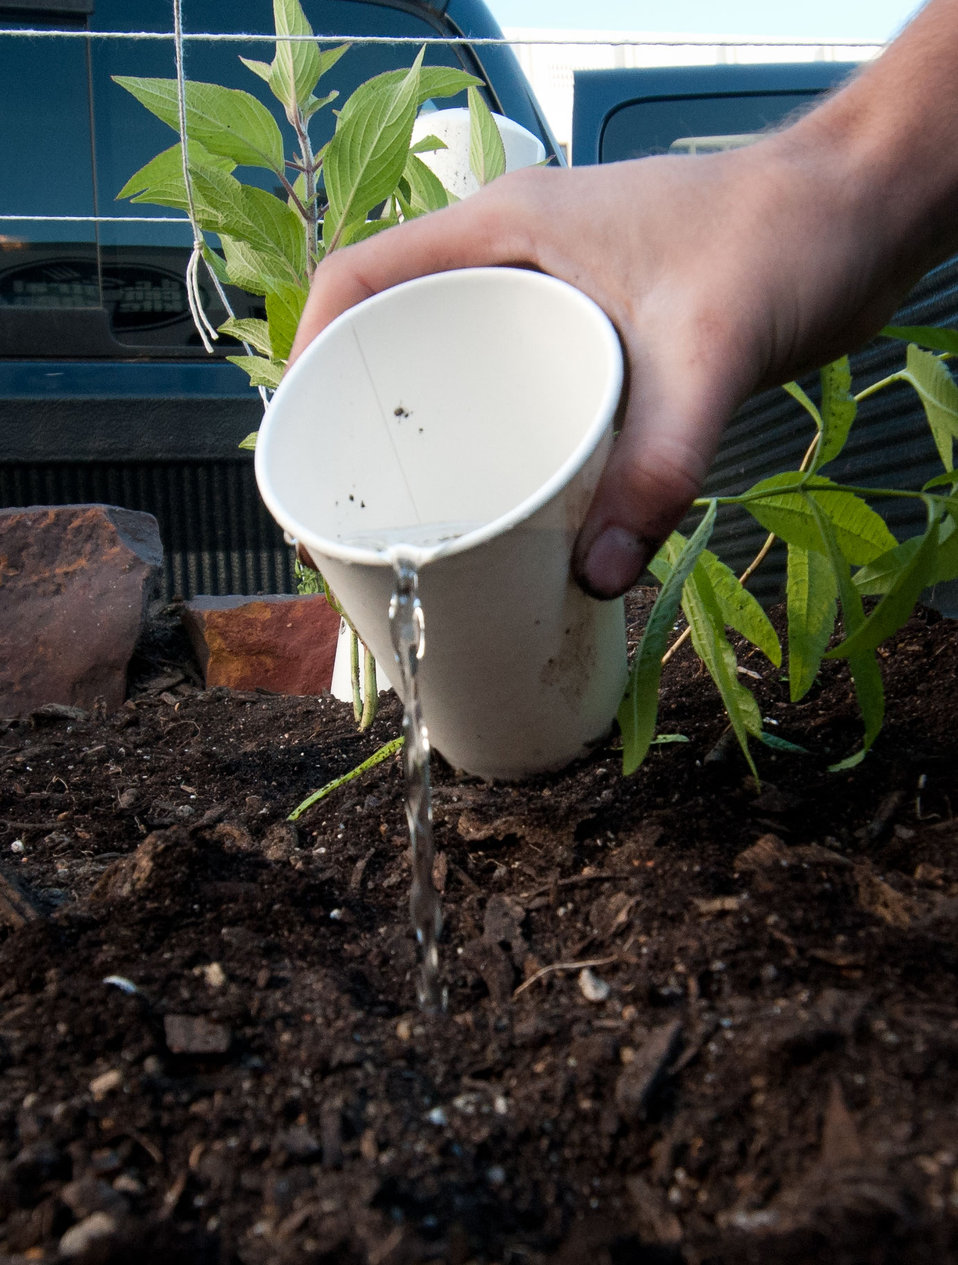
Water is added to a planting hole before seeds are added to the Truck Farm in Washington, D.C. on Friday, April 6, 2012. The Truck Farm is a D.C. Central Kitchen and U.S. Department of Agriculture’s People’s Garden Initiative partnership. Like other Truck Farms around the country, this trusty pick-up will travel around the city to schools and community sites, teaching children about healthy eating and where their food comes from by using the garden display in its truck-bed. Along with other local donors, the People’s Garden Initiative supports this “edible exhibit” by providing seedlings and educational materials.